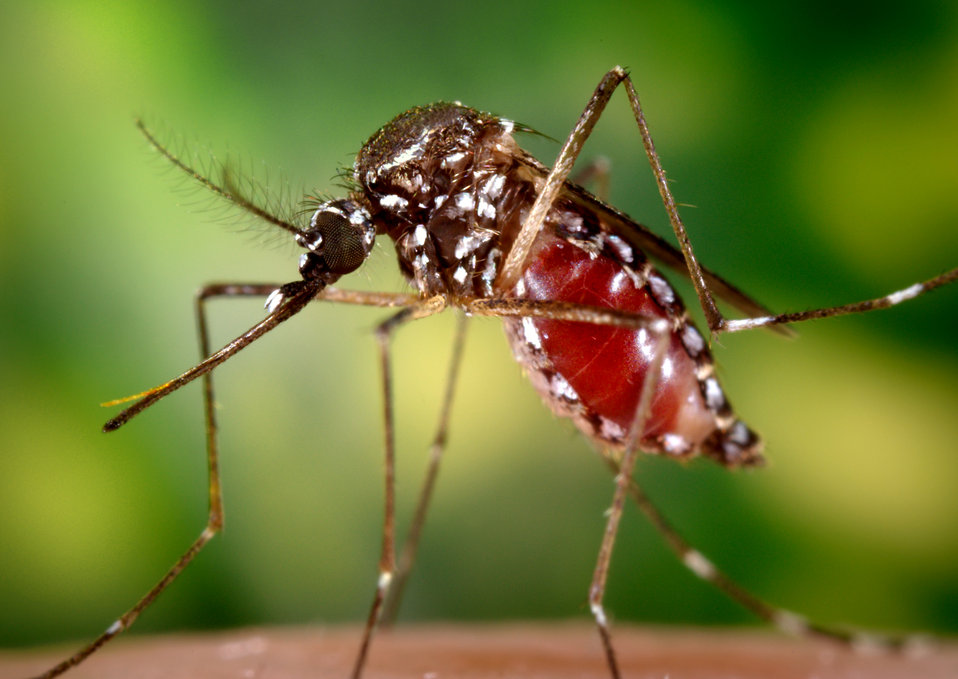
This 2006 image depicted a female Aedes aegypti as she was about to fly off of a host's skin surface after having obtained her blood-meal. In this case, what would normally be an unsuspecting host was actually the CDC's biomedical photographer's own hand, which he'd offered to the hungry mosquito so that she'd alight, and be photographed while feeding. As it filled with blood, the abdomen became distended, stretching the exterior exoskeletal surface, thereby, causing it to become transparent, allowing the collecting blood to become visible as an enlarging intra-abdominal red mass. The tip of the sharply-pointed fascicle is visible as a yellow tube, which is about to become concealed inside the labium of her proboscis.